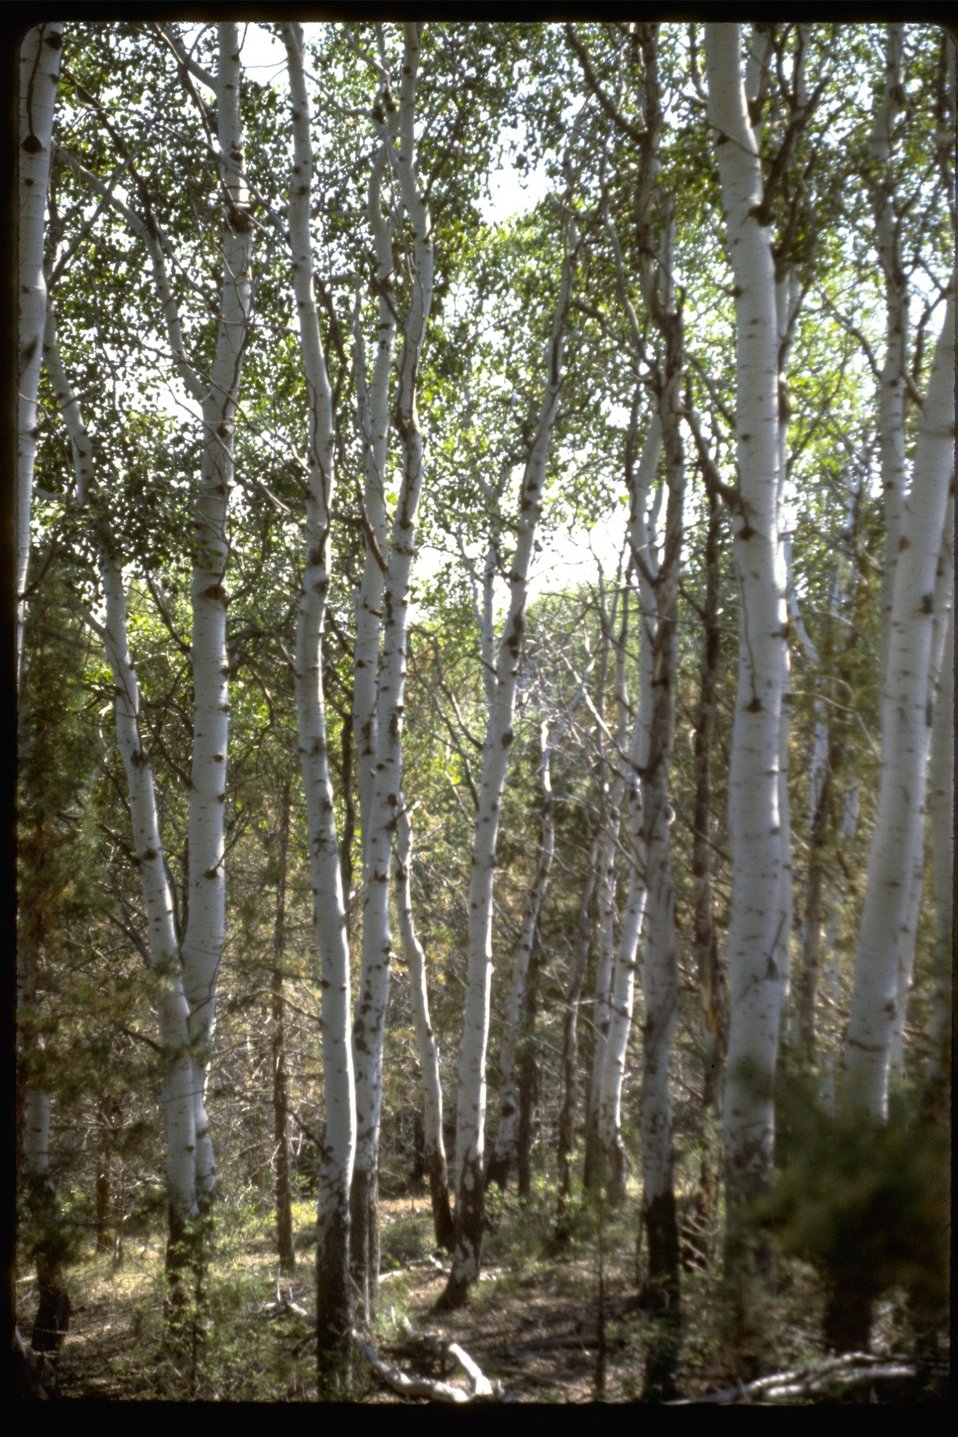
Grove of Aspen trees.